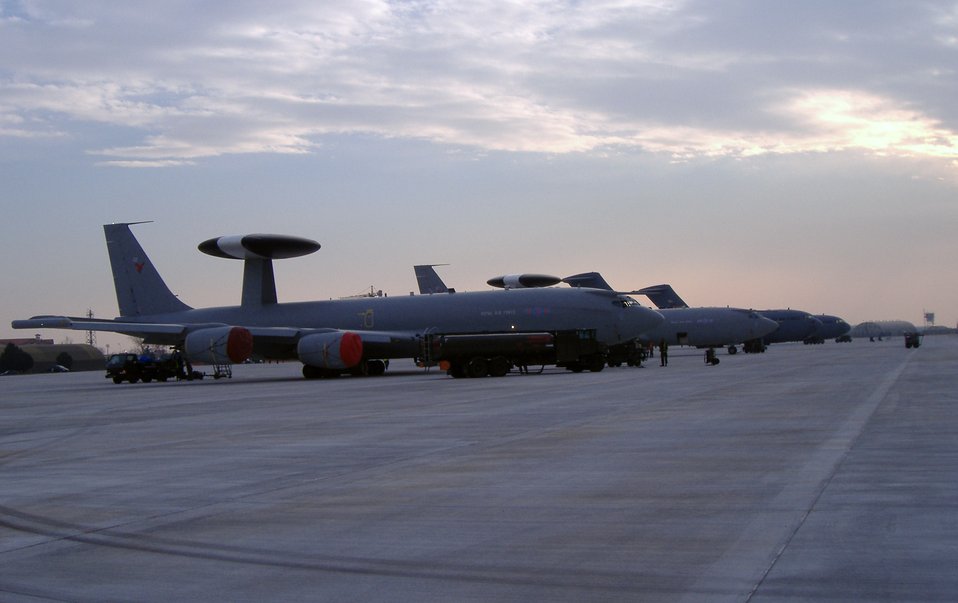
Protecting the 2006 Olympics

Two NATO E-3 AWACS sit on the new south ramp at Aviano Air Base, Italy. The NATO aircraft were providing overflight protection for the Winter Olympics at Torino, Italy in 2006.